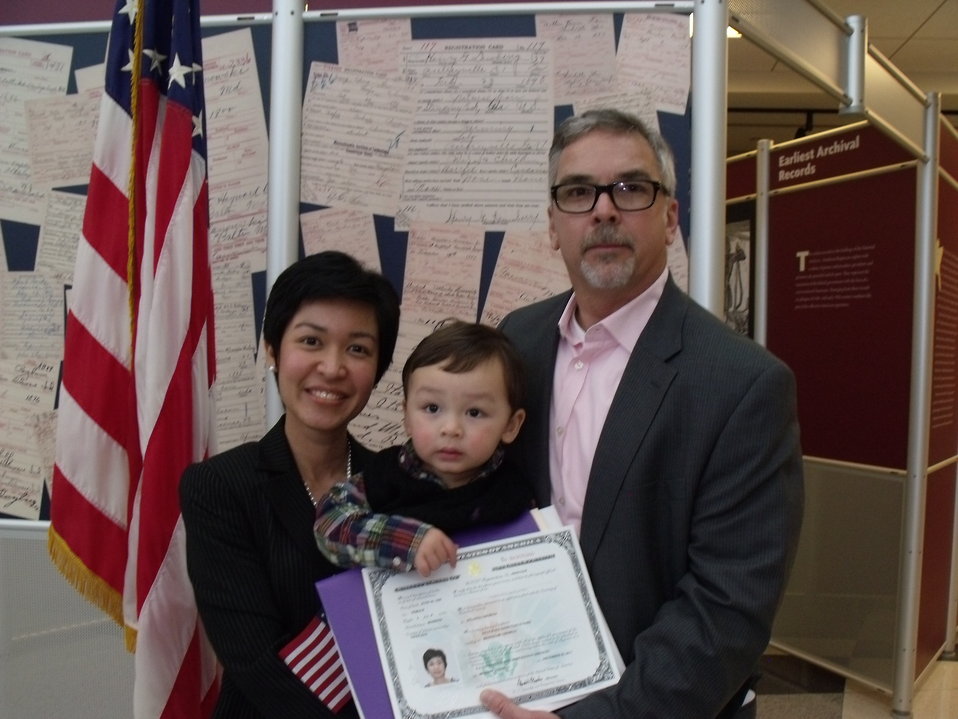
New Citizens